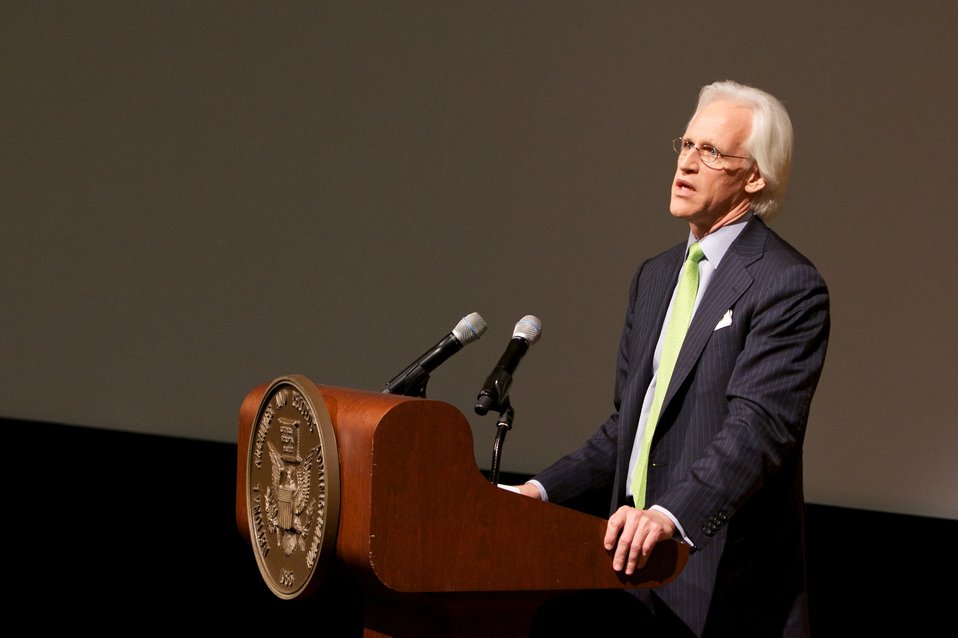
Monuments Men Public Screening; Robert M. Edsel, author, introduces The Monuments Men film based on his book of the same title